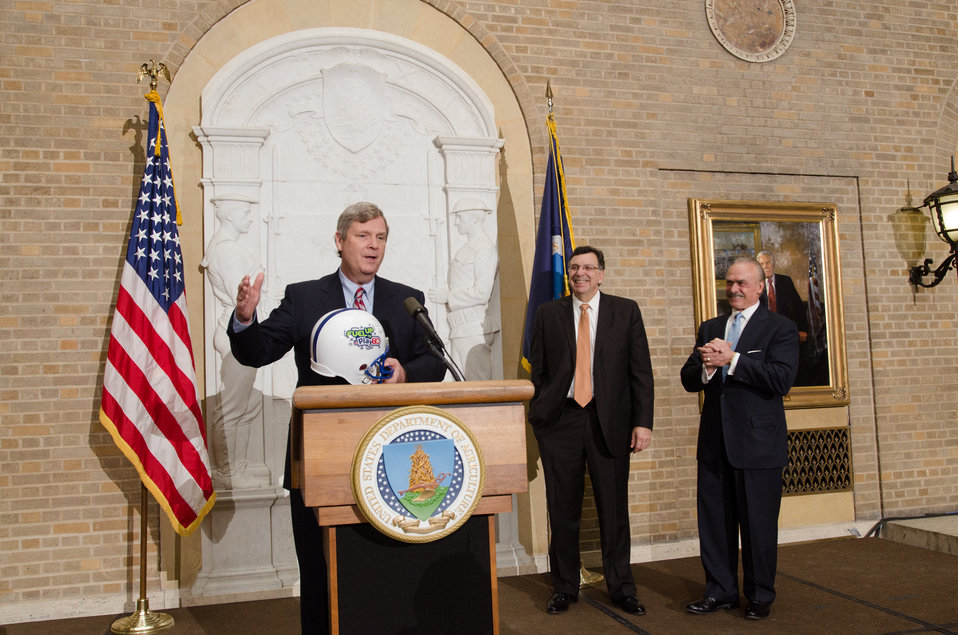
Agriculture Secretary Tom Vilsack makes remarks after receiving a National Football League Fuel Up to Play 60 helmet for the work that the U.S. Department of Agriculture (USDA) has done in support of the dairy industry at a luncheon with with dairy producers, Dairy Management, Inc., (DMI) and other stakeholders from the dairy producers industry in the Whitten Building Patio, in Washington, D.C. on Tuesday, Feb. 26, 2013.